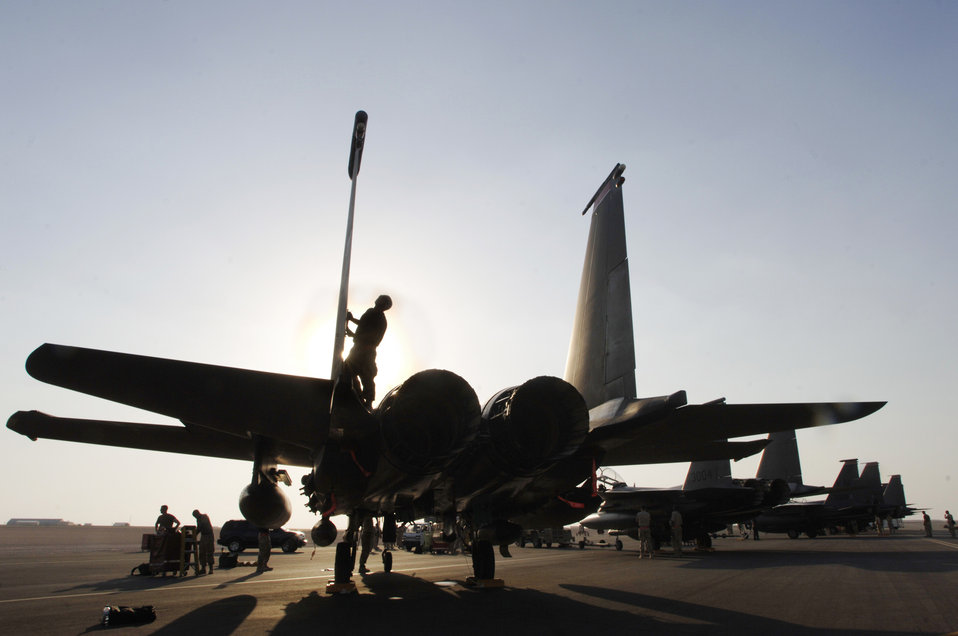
Strike Eagles have landed

Staff Sgt. Sean Tracey, Senior Airman Sean Timothy and Airman 1st Class Henry Rodriguez perform a post-flight inspection on an F-15 Strike Eagle at a forward-deployed base in Southwest Asia Sept. 21. The three F-15E crew chiefs are assigned to the 494th Aircraft Maintenance Unit.